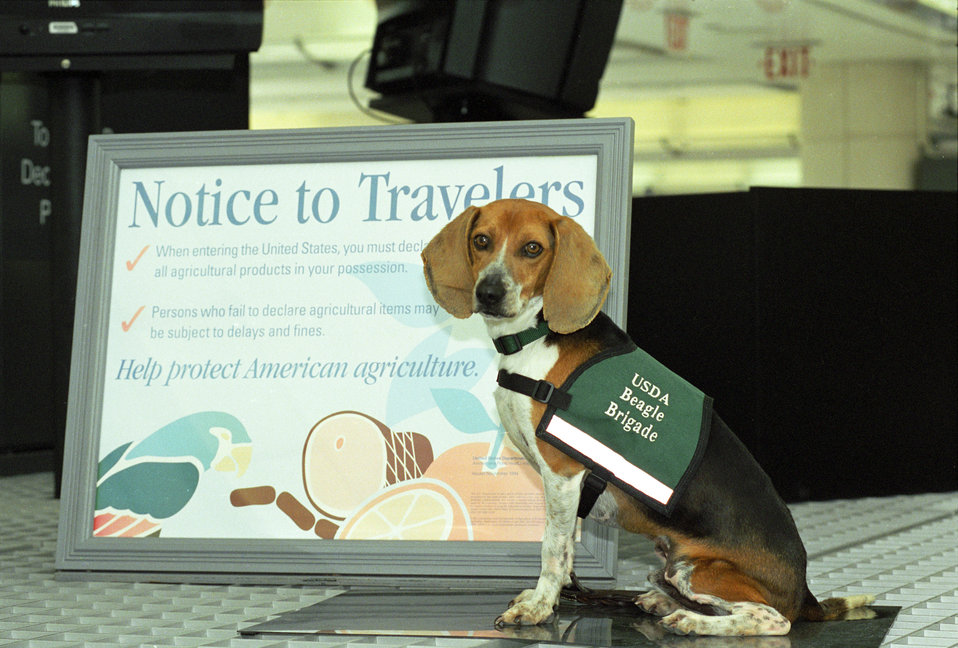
This beagle sits in front of a travelers warning sign at Washington Dulles International Airport in Chantilly, VA on March 14, 2001. The Beagle Brigade is a team of beagles and their human handlers who, as part of the U.S. Department of Agriculture's (USDA) Animal and Plant Health Inspection Service (APHIS) inspect luggage at U.S. airports searching for agricultural products. The Beagle Brigade program averages around 75,000 seizures of prohibited agricultural products a year. Unauthorized meat, animal byproducts, fruit and vegetables can carry diseases and pests that have the potential to infect U.S. agriculture. APHIS works in conjunction with the U.S. Customs and Border Protection and the U.S. Public Health Service at entry points to the U.S., including land borders, ports and airports. The Beagle Brigade generally works in the baggage-claim area at international airports. After 911, the Beagle Brigade is under the authority of Homeland Security.